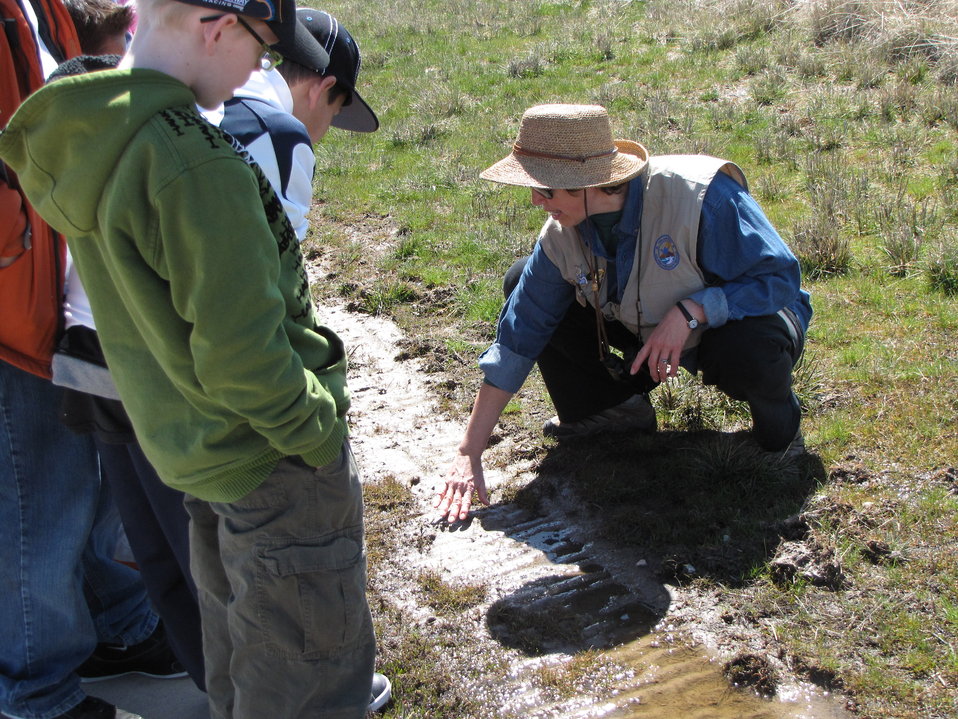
Looking for Tracks

Volunteer DeAnn teaches local school children about tracks during the Refuge Mountain Wilds to Wetland Wonders program at Bear River Migratory Bird Refuge in Utah.